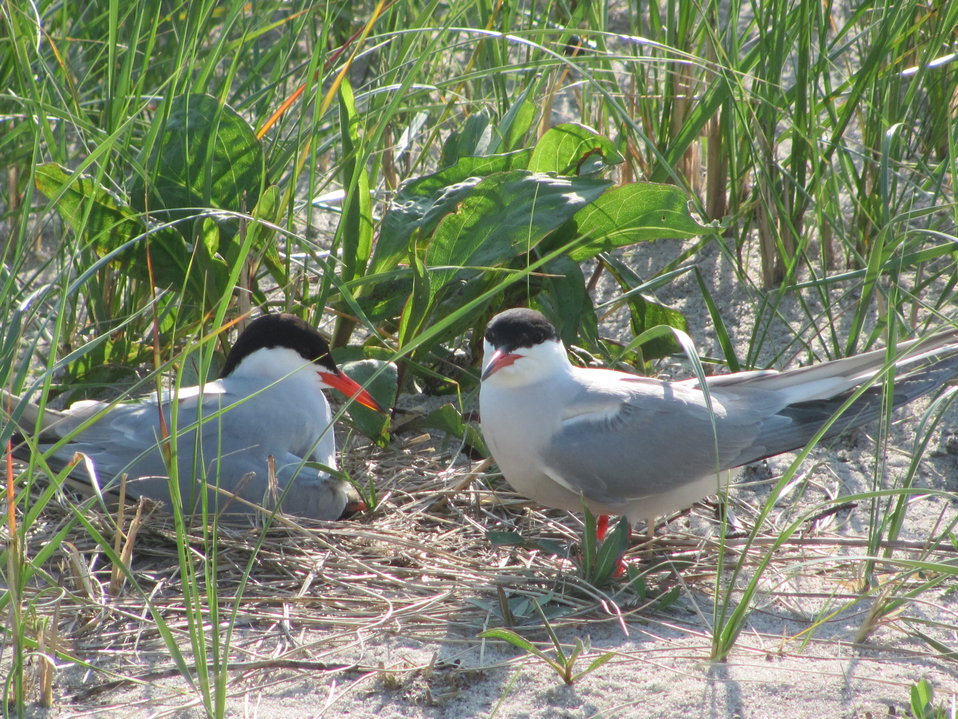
Common terns, Monomoy Refuge

Adult common terns, Monomoy National Wildlife Refuge, MA.